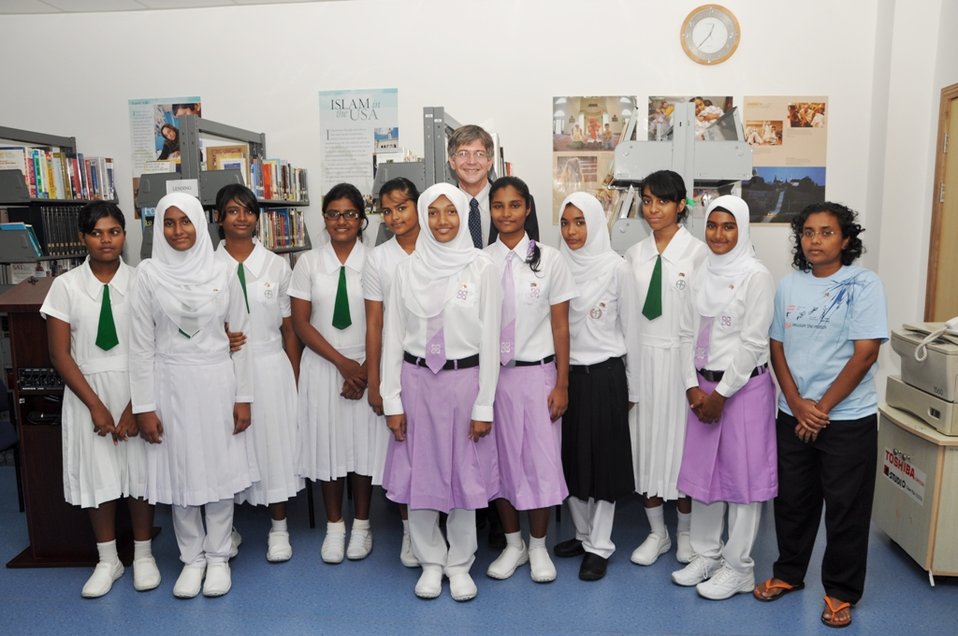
Deputy Secretary Steinberg Poses for a Photo With a Maldvian Girls Soccer Team

U.S. Deputy Secretary of State James Steinberg poses for a photo with a Maldivian girls soccer team that recently visited the United States in Male, Maldives, on January 29, 2011.